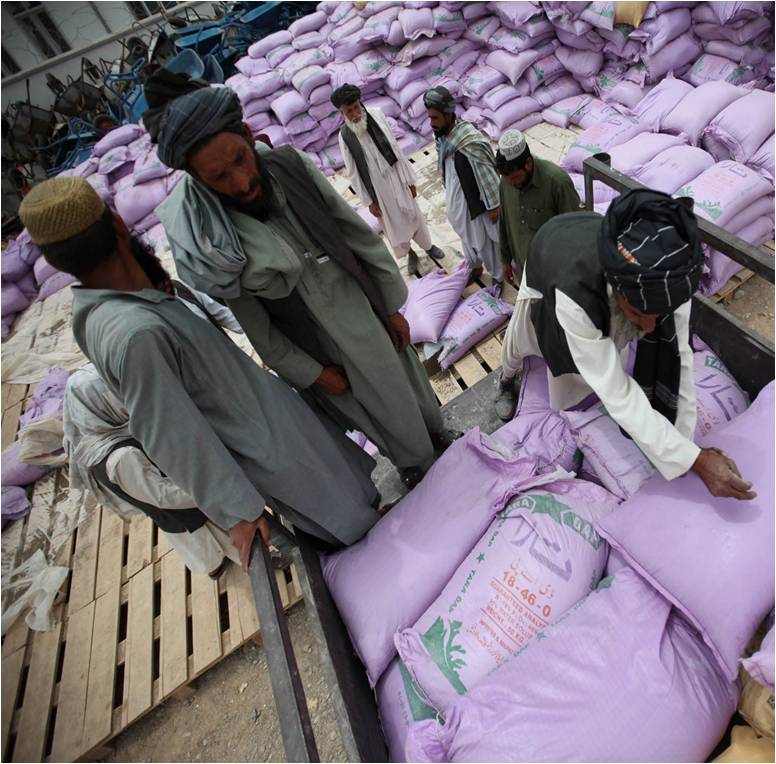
Seeding Prosperity with Vouchers

The Afghanistan Vouchers for Increased Production in Agricul-ture Plus (AVIPA Plus) distribution of vegetable seed, fertilizers, and vegetable row cover material in Nad-e Ali district is helping bring a new level of prosperity to thousands of farmers in this central district of Hilmand Province, Afghanistan.

The distribution, which began at the end of March, will reach 4,000 farmers. The vegetable seeds, fertilizers, and row cover components have a combined value of nearly $3 million.

Row cover material is usually a lightweight synthetic, such as clear plastic, placed directly above rows of crops on a support-ing framework, often wire hoops, to form a low tunnel. The low tunnels will help farmers extend the growing season by allowing them to plant earlier in the spring and grow later in the fall. This will increase farmers’ profits by allowing them to bring vegetables to market outside of the peak season.
The tunnels will provide the farmers with additional income that will enable them to reinvest in improved seed next season or in infrastructure projects on their farms - or simply build their savings – all of which will increase stability in this region of Af-ghanistan.